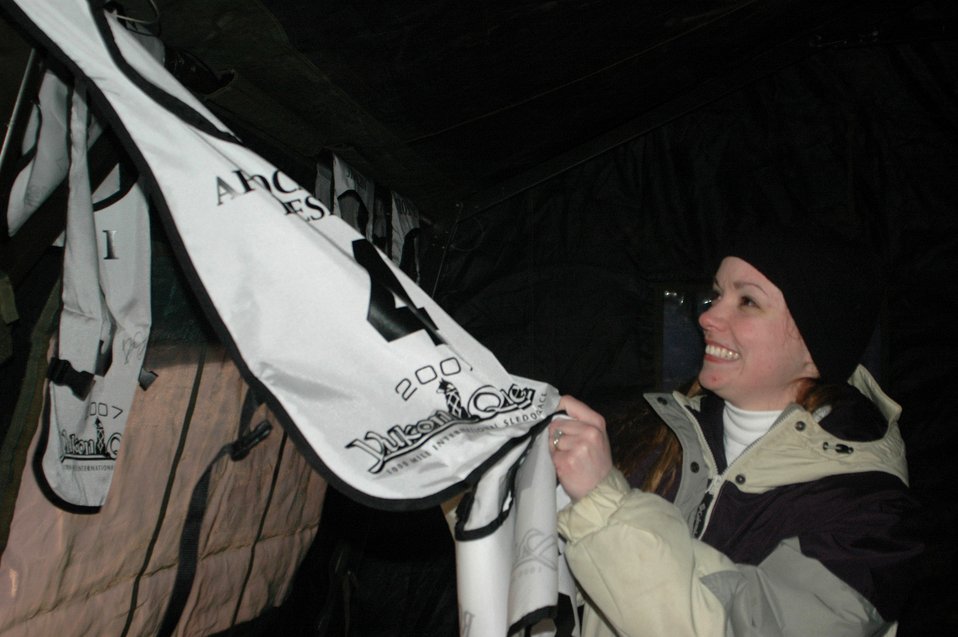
Eielson Airmen help keep mushers, dogs in race

Senior Airman Cheryl Hoellwarth sorts through bibs to give to mushers Feb. 20 at the Dog Drop, the last checkpoint in the Yukon Quest before the finish line in Fairbanks. The Yukon Quest is a 1,000-mile international dog sled race held annually in Alaska. Sergeant. A volunteer for the event, Airman Hoellwarth is a fitness specialist with the 354th Services Squadron at Eielson Air Force Base.